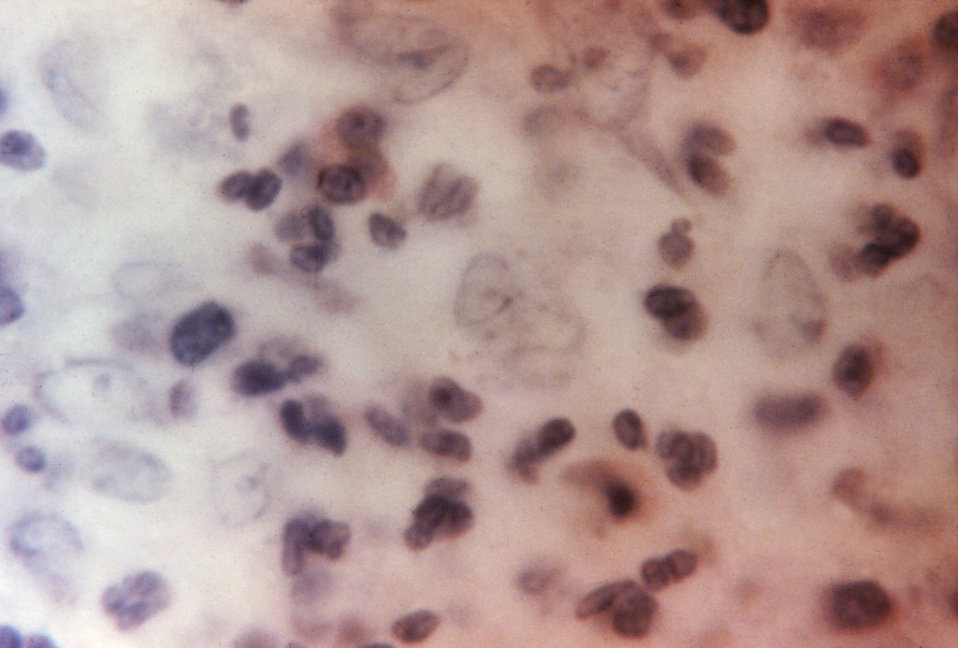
This photomicrograph reveals 'Donovan bodies' in a skin sample used to diagnose granuloma inguinale.